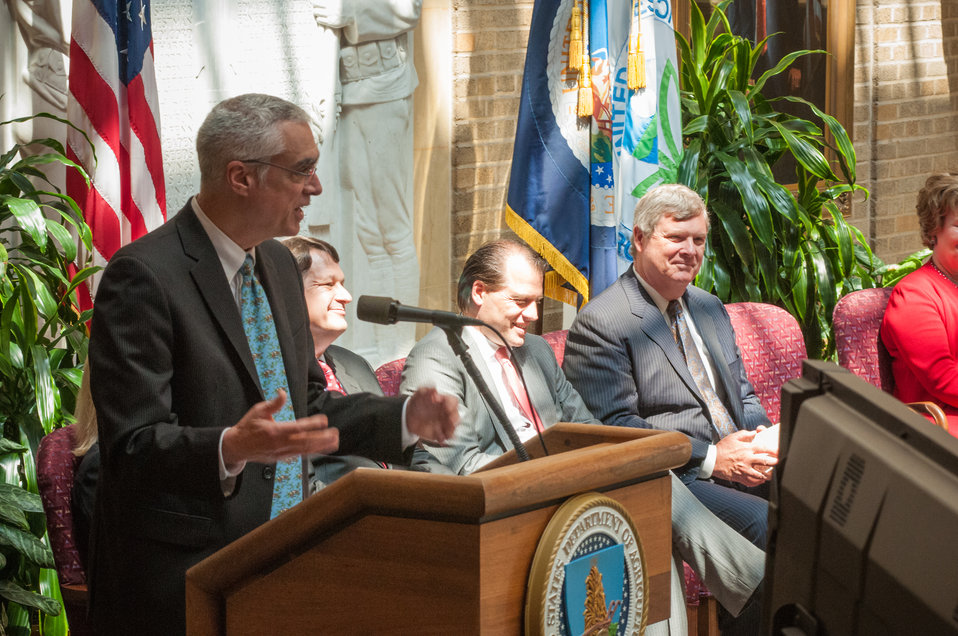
Environmental Protection Agency (EPA) Acting Administrator Bob Perciasepe speaks at the launching of the U.S. Food Waste Challenge held at the U.S. Department of Agriculture (USDA) in Washington, D.C. on Tuesday, Jun. 4, 2013. The U.S. Food Waste Challenge is a nationwide effort by USDA and the Environmental Protection Agency (EPA) to reduce, recover and recycle U.S. food waste. Representatives from Gills Onions/Rio Farms, Unilever, Food Marketing Institute, National Restaurant Association, Grocery Manufacturers Association, Food Waste Reduction Alliance, Feeding America and Rock and Wrap It Up! were also present.